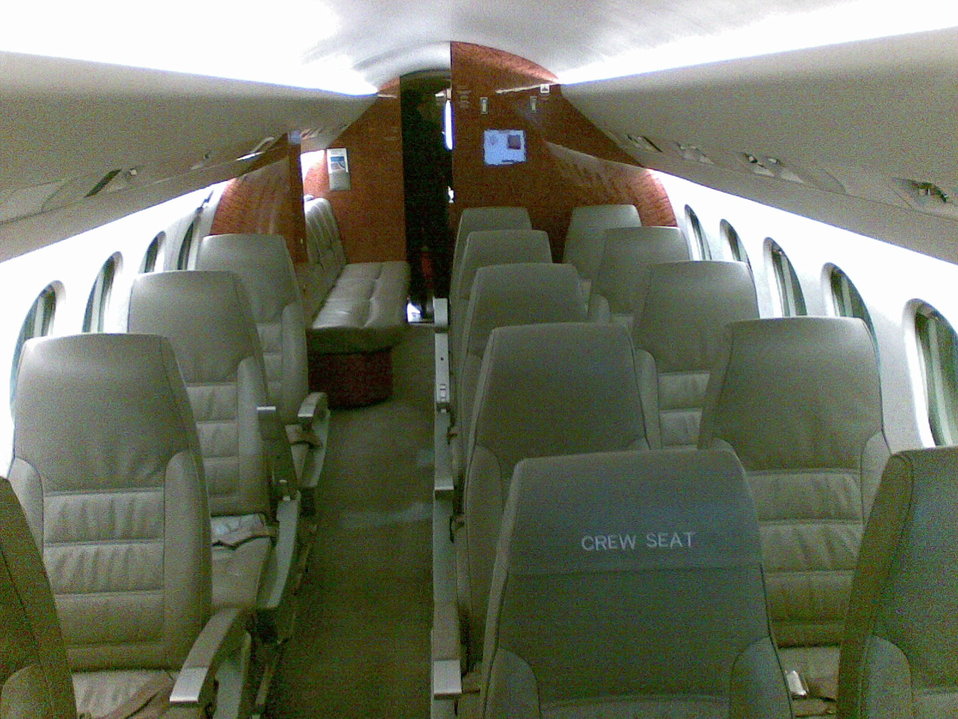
Deutsch: D-AZEM Kabine